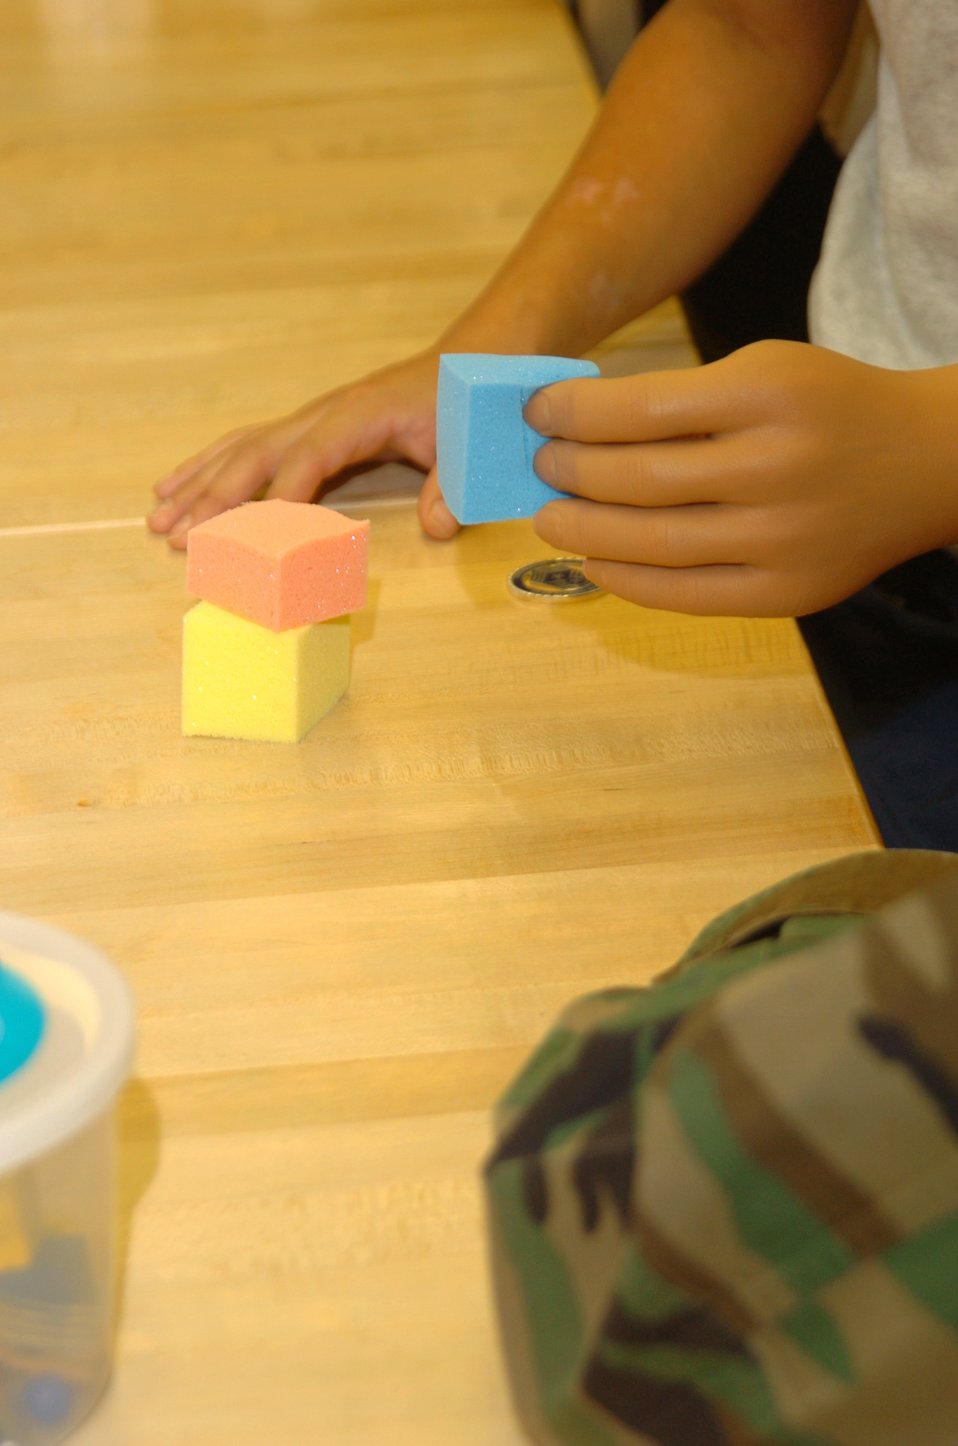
Airman wants to continue to serve

After about a month of working with his prosthetic arm, Senior Airman Dan Acosta is adept enough with it to stack foam blocks during a warm-up exercise Thursday, Feb. 23, 2006, in the amputee rehabilitation clinic at Brooke Army Medical Center in San Antonio.